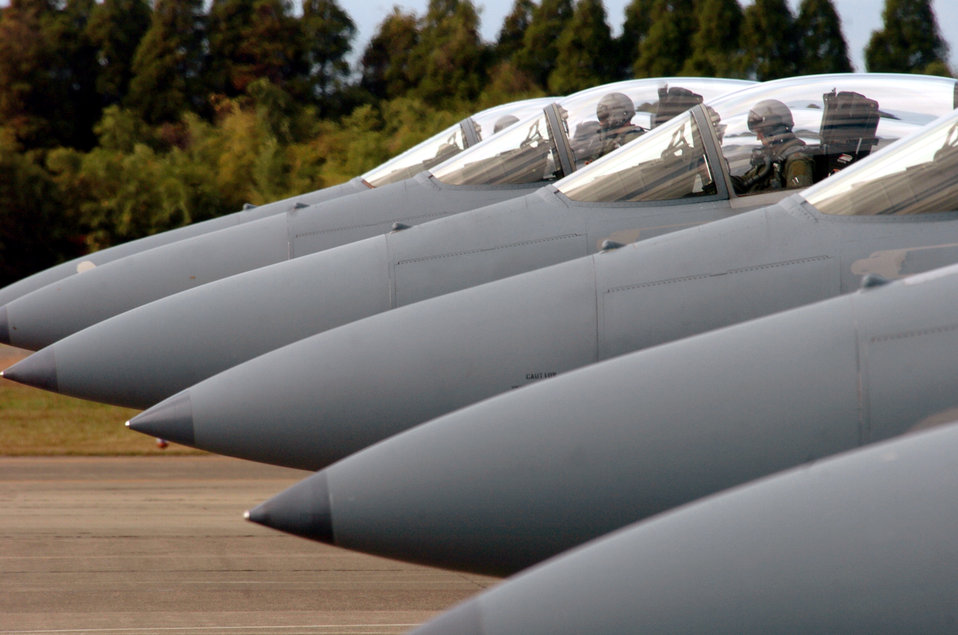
So long Sword

HYAKURI AIR BASE, Japan -- F-15 Eagles prepare for an exercise Keen Sword 2005 mission here. The exercise, which ended Nov. 19, is designed to further increase the defensive readiness of Japanese and American forces through training in air, ground and sea operations, and to improve interoperability between the countries. The aircraft are assigned to the 67th Fighter Squadron at Kadena Air Base, Japan.